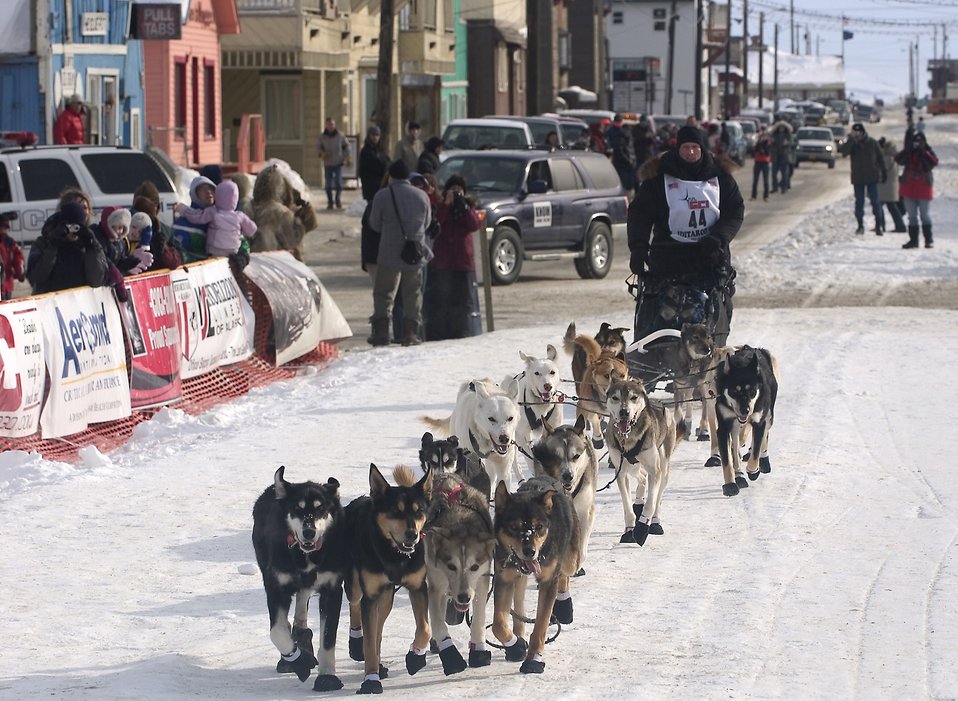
Air Force doctor finishes Iditarod with flourish

Maj. (Dr.) Thomas Knolmayer and his dog team head to the finish line of the 2006 Iditarod Sled Dog Race on Friday, March 17, 2006, in Nome, Alaska. Doctor Knolmayer finished the 1,150-mile race across Alaska in 11 days, 22 hours and 13 minutes. It was 47 hours faster than his time last year. Doctor Knolmayer is chief of surgery at the 3rd Medical Group, Elmendorf Air Force Base, Alaska.